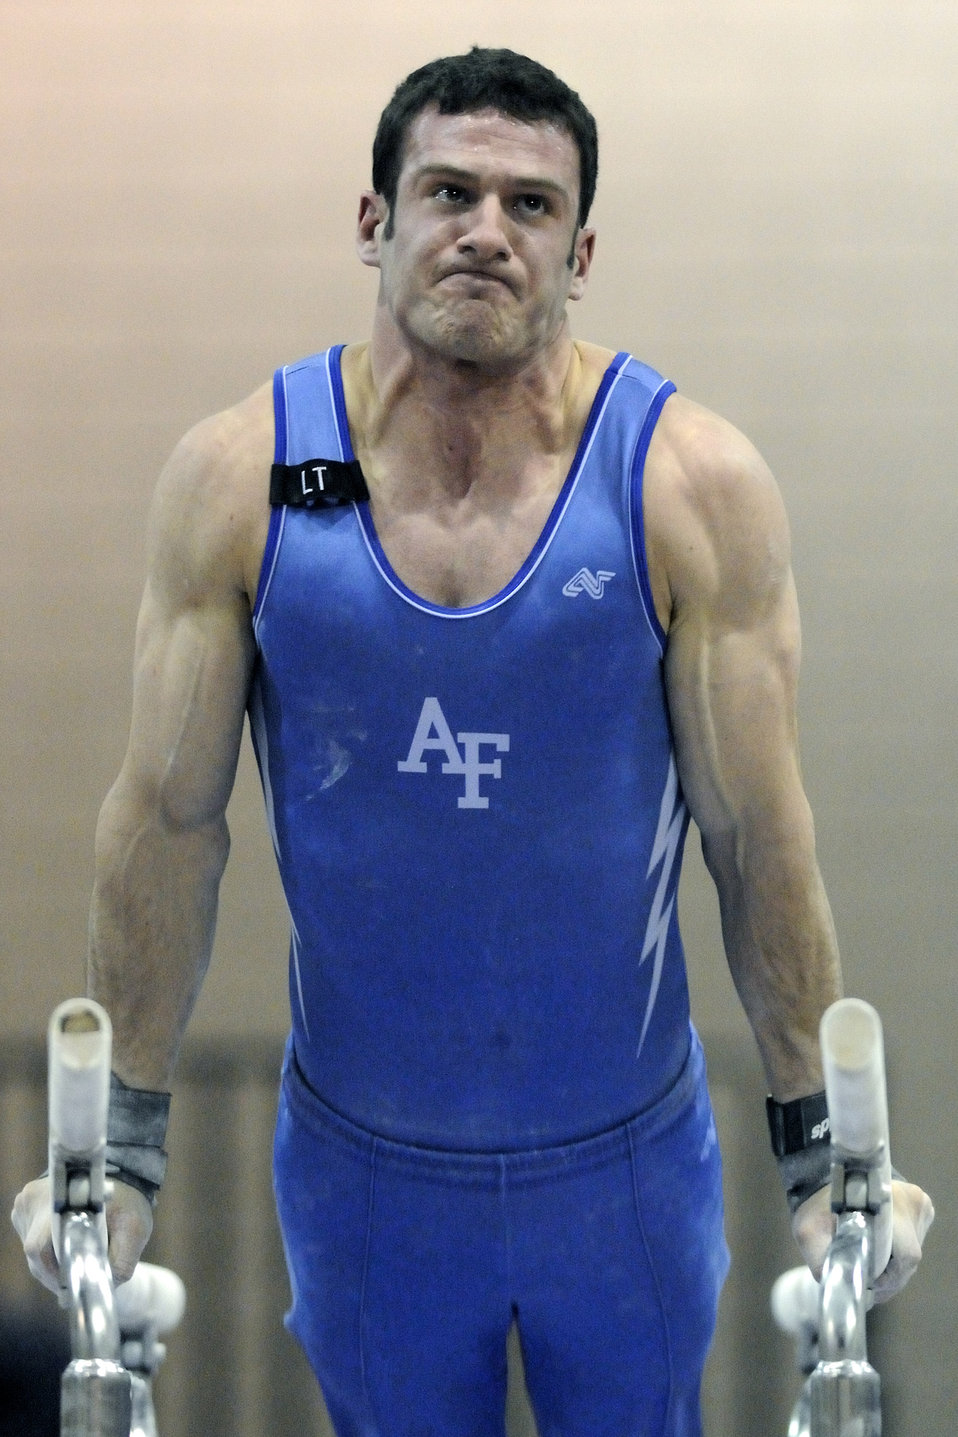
Airpower

U.S. Air Force Academy junior Garrett Canter performs on the parallel bars during the annual Rocky Mountain Open Jan. 10 at the Academy in Colorado. The Falcons men's gymnastics team accounted for seven top-10 finishes as they placed third overall in the meet in front of a capacity crowd.